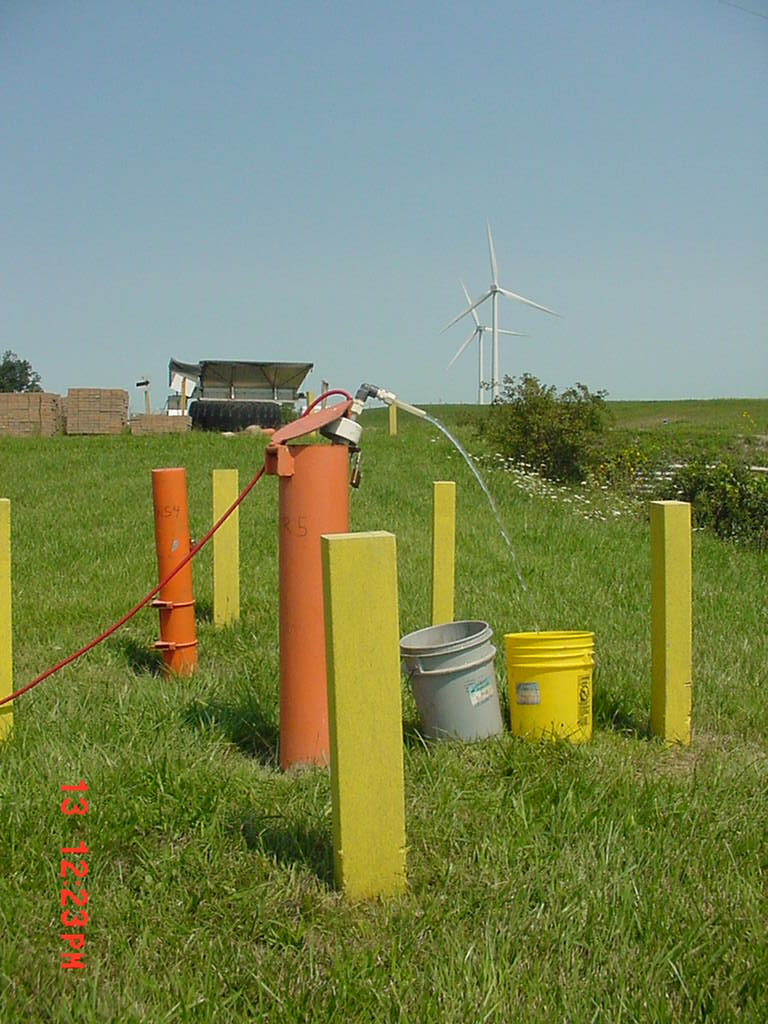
Uploaded by request of Ken Brock

Taken in Bowling Green, Ohio

Sampling ground water monitoring wells at a municipal waste landfill with 390-foot tall wind turbines in the background. The monitoring wells are orange. The yellow posts are bumper-posts to protect the wells.